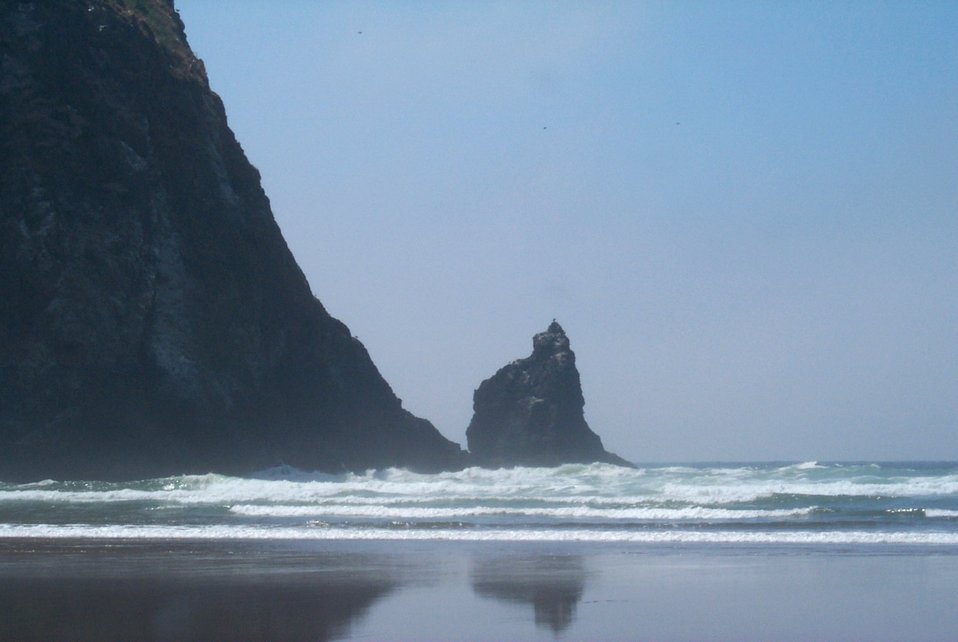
Sea stack on the north side of Haystack Rock at Cannon Beach.